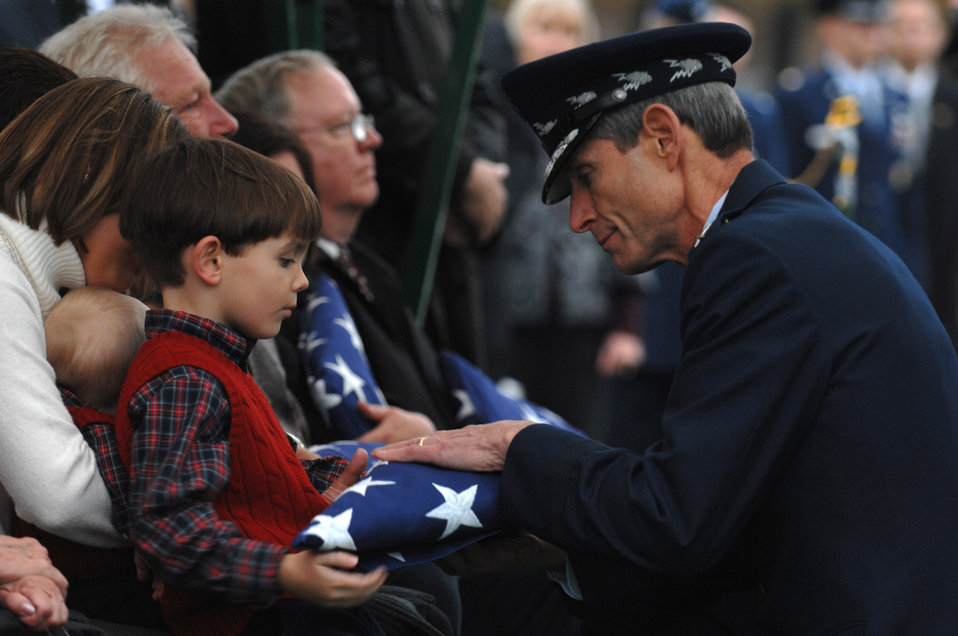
Remains of B-52 aircrew laid to rest at Arlington

Gen. Norton Schwartz hands a folded American flag to one of the family members of the fallen B-52 Stratofortress crewmembers Nov. 14 at Arlington National Cemetery in Virginia. A group burial took place for six crewmembers of a B-52 that crashed off Guam's Northwest coast July 21. General Schwartz is the Air Force chief of staff.